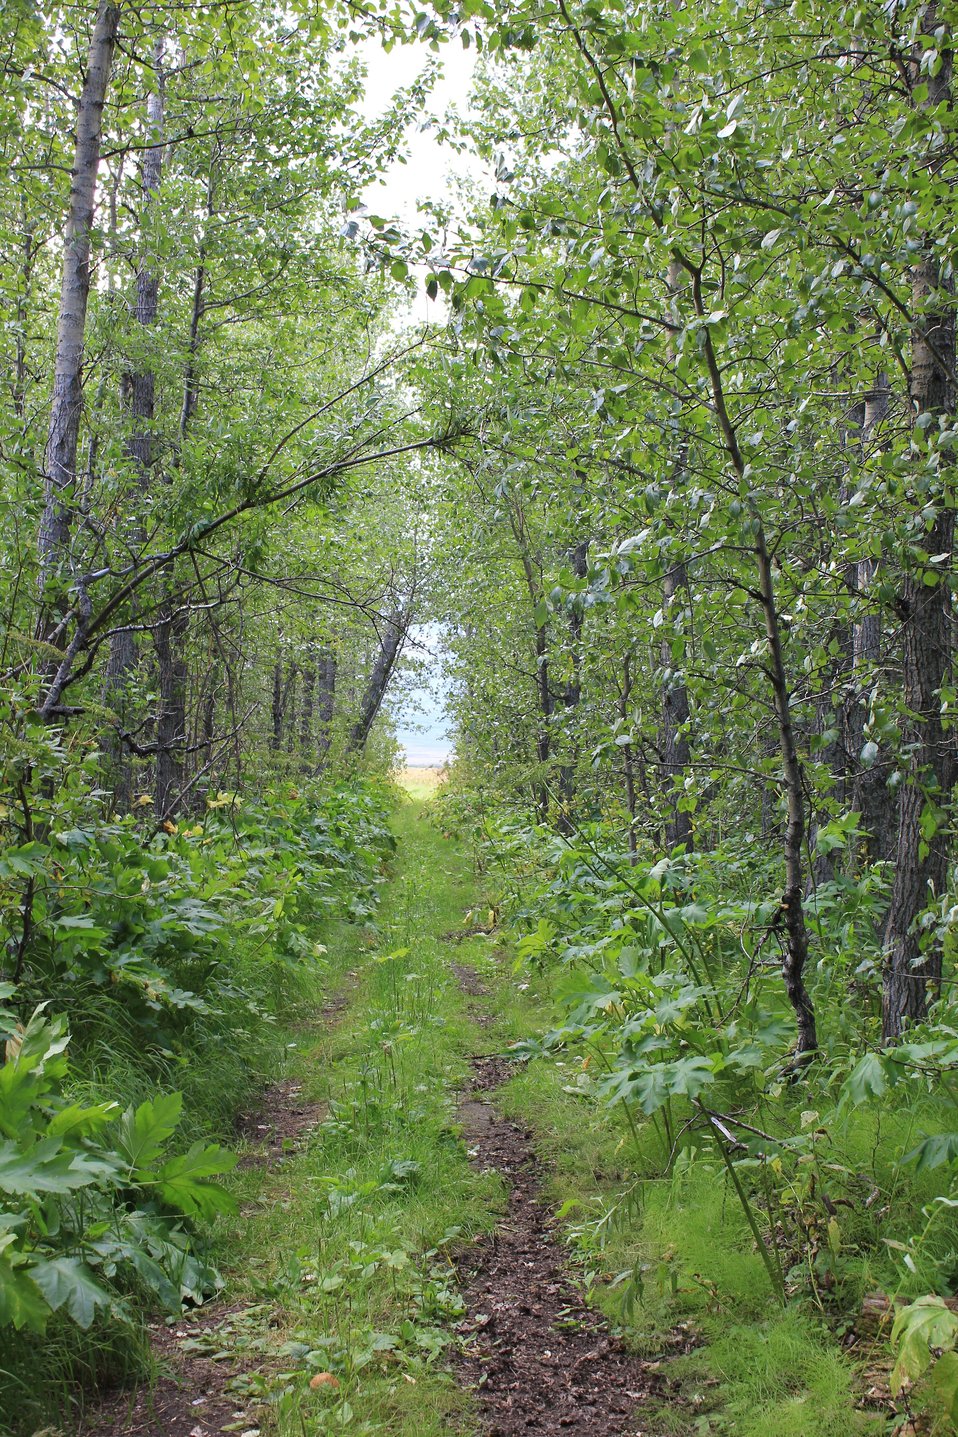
Believed to be the largest trees on the Seward Peninsula at Pilgrim Hot Springs. The geothermal heat allows these trees to thrive in this area. The permafrost has melted in this area leaving a thermal oasis.